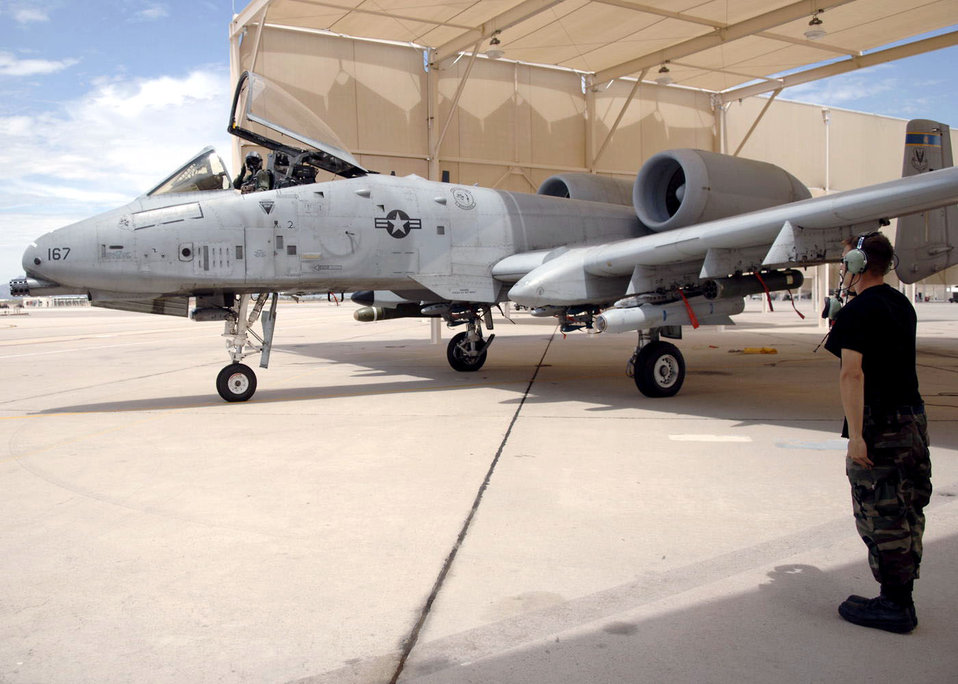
Thunderbolts on duty

Airman 1st Class Brett Davis marshals Lt. Col. Francis McDonough as he prepares to take off in his A-10 Thunderbolt II at Davis-Monthan Air Force Base, Ariz., on July 7. Colonel McDonough is assigned to the 355th Wing. He was recently deployed to Bagram Air Base, Afghanistan, in support of Operation Enduring Freedom. Airman Davis is a crew chief with the 354th Aircraft Maintenance Unit.